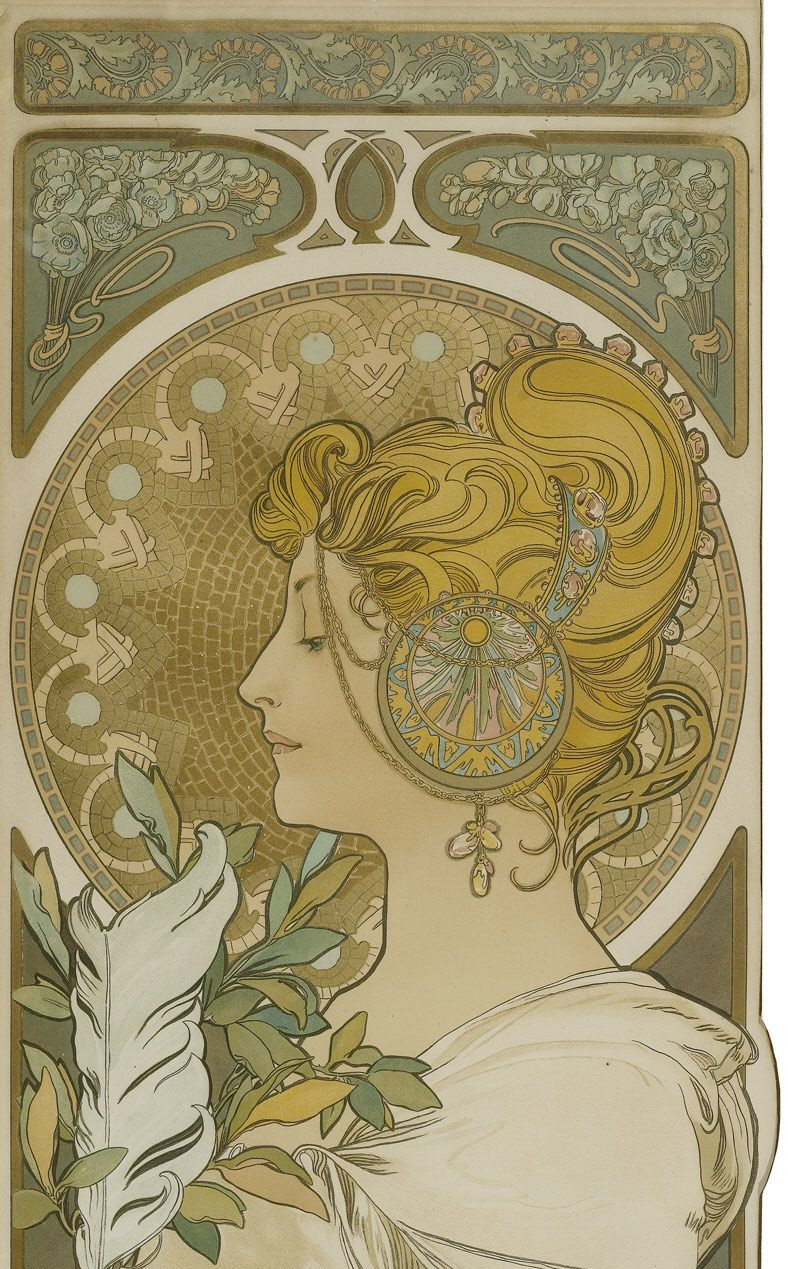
La Plume. Lithographie couleurs. Signé et daté Mucha 99 dans la pierre en bas à gauche. 72x27 cm.